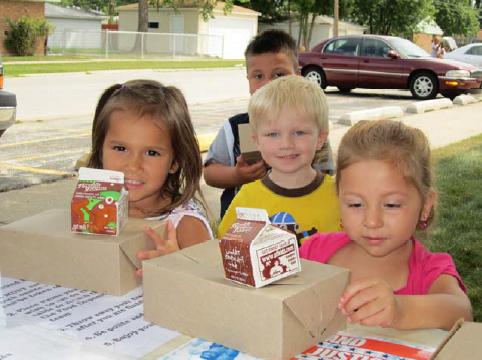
SFSP Picture

The U.S. Department of Agriculture’s (USDA) Summer Food Service Program (SFSP) helps children in Cook County, IL enjoy a nutritious summer meal from the Greater Chicago Food Depository’s Lunch Bus on June 18, 2012. The SFSP is a federally funded program that is administered by the states in which they reimburse organizations for meals served to children during the summer months.